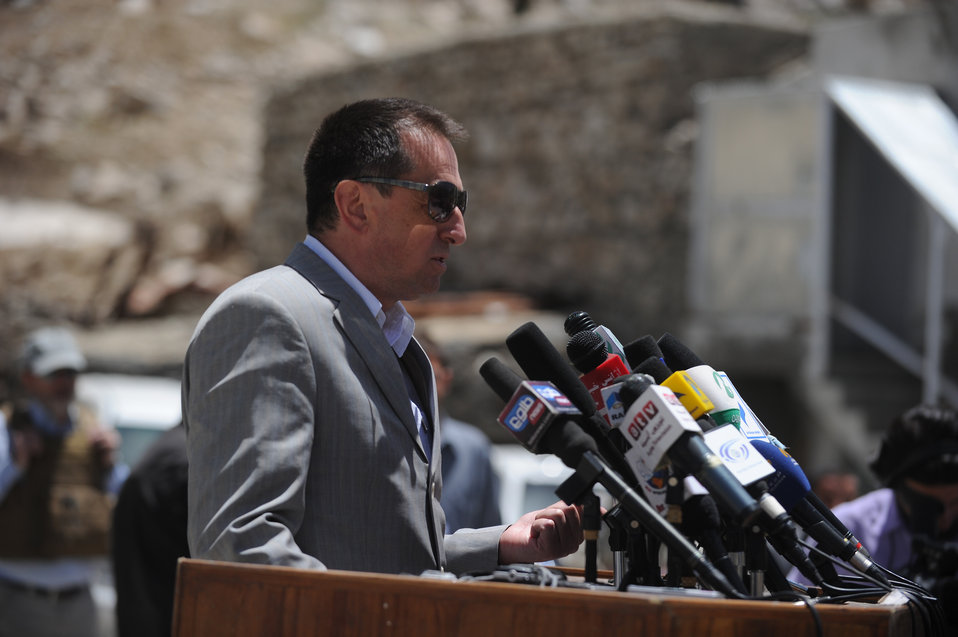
Russian Ambassador Andrey Avetisyan makes remarks during a ceremony to mark the beginning of renovations at the Salang Tunnel on the border of Parwan and Baghlan Provinces, Afghanistan, on Wednesday, June 15, 2011. (S.K.Vemmer/Department of State)